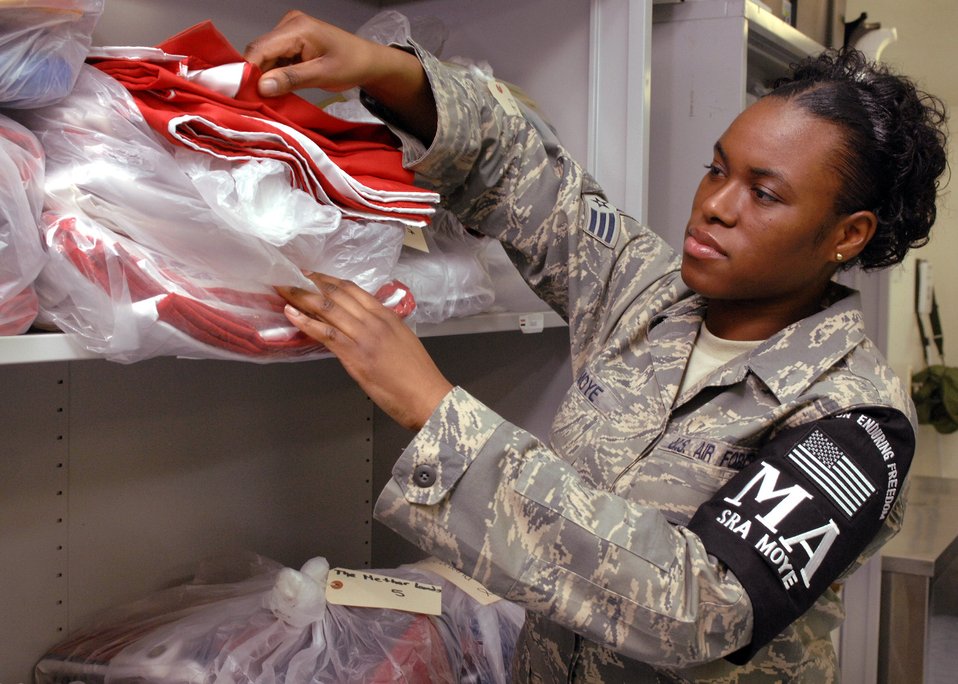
Airman gives all for the families

Senior Airman Sekina Moye re-arranges coalition flags in the mortuary affairs section at Bagram Air Base, Afghanistan, March 17. Airman Moye, a fitness specialist from the 435th Services Squadron, Ramstein Air Base, Germany, is deployed to the 755th Air Expeditionary Group and was recently selected as Bagram's Warrior of the Week for her outstanding work ethic as the only Air Force mortuary affairs technician at Bagram.